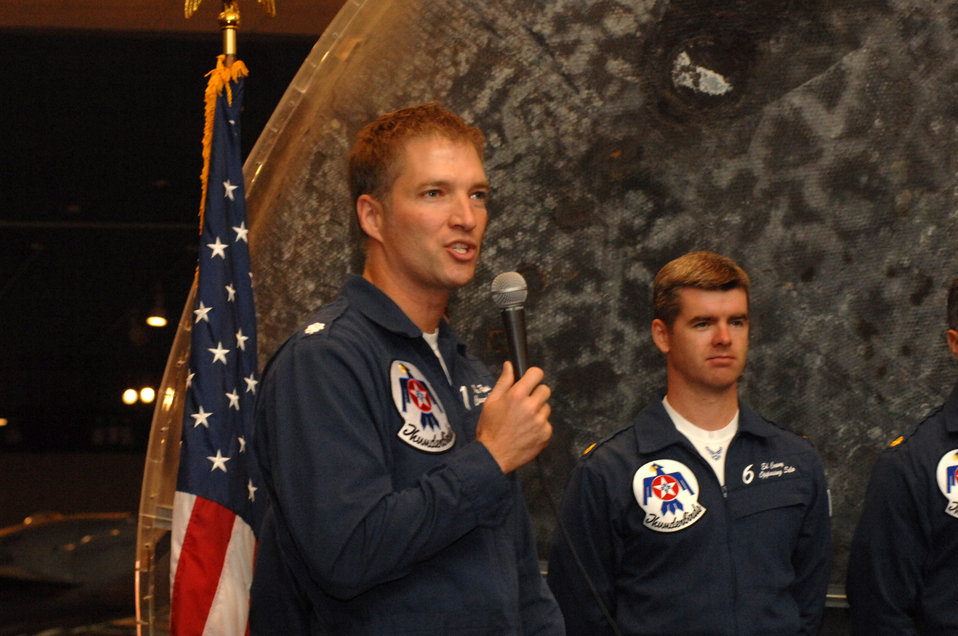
Thunderbirds visit Smithsonian Air and Space Museum

Lt. Col. Kevin Robbins tells a crowd about festivities planned for the week that will involve the Air Force Thunderbirds at the Smithsonian Air and Space Museum Oct. 11 in Washington, D.C. Colonel Robbins is the commander of the Thunderbirds demonstration team and was at the Smithsonian as part of a week-long series of events that will culminate with the dedication of the Air Force Memorial Oct. 14.